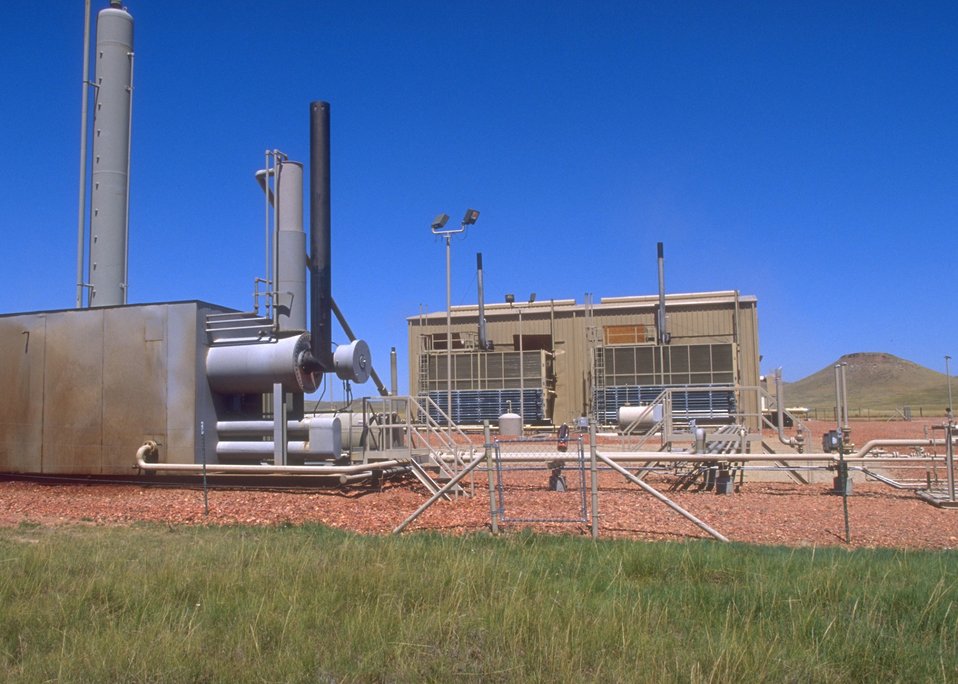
Facilities used in the production of coal bed methane, Buffalo Field Office.